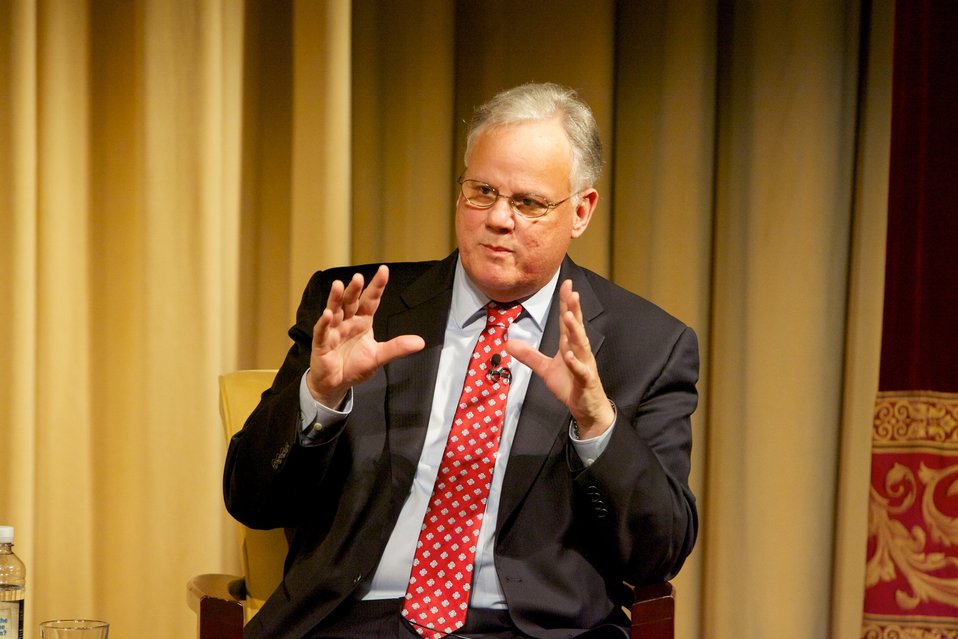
The Monuments Men; Michael J. Kurtz (right), former Assistant Archivist for Records Services